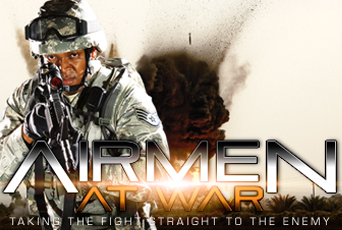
Airman magazine Web site goes live

Airman online has been revamped with a new look. The magazine's new Web page went online May 1, along with the special May-June issue of the magazine dedicated to profiling some of America's Airmen at war.